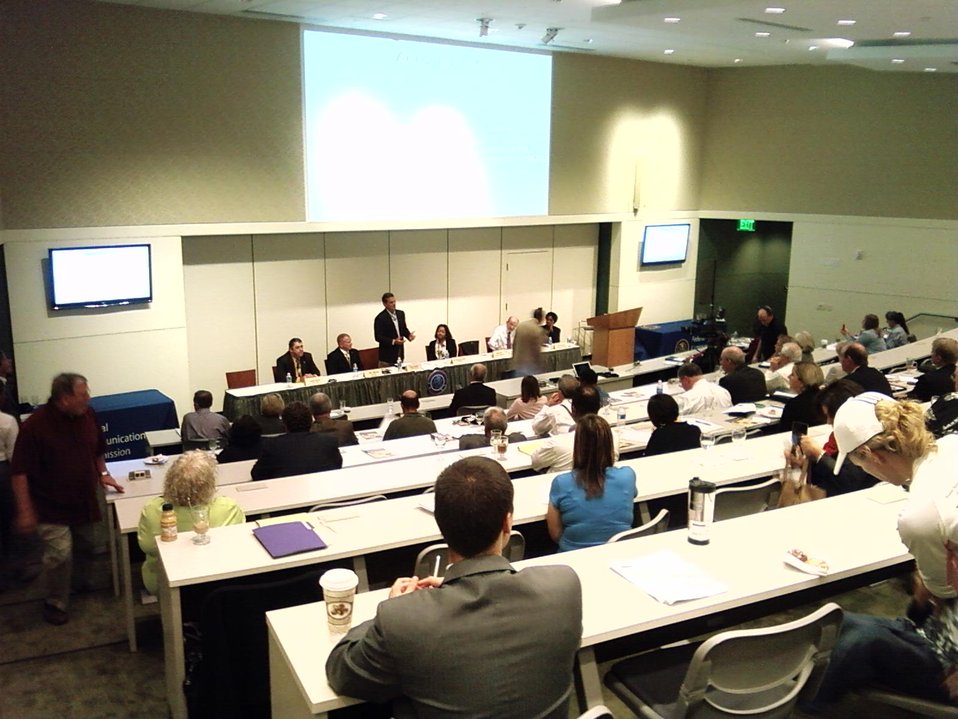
sc event 20Field Hearing on Broadband Adoption 10-6-09